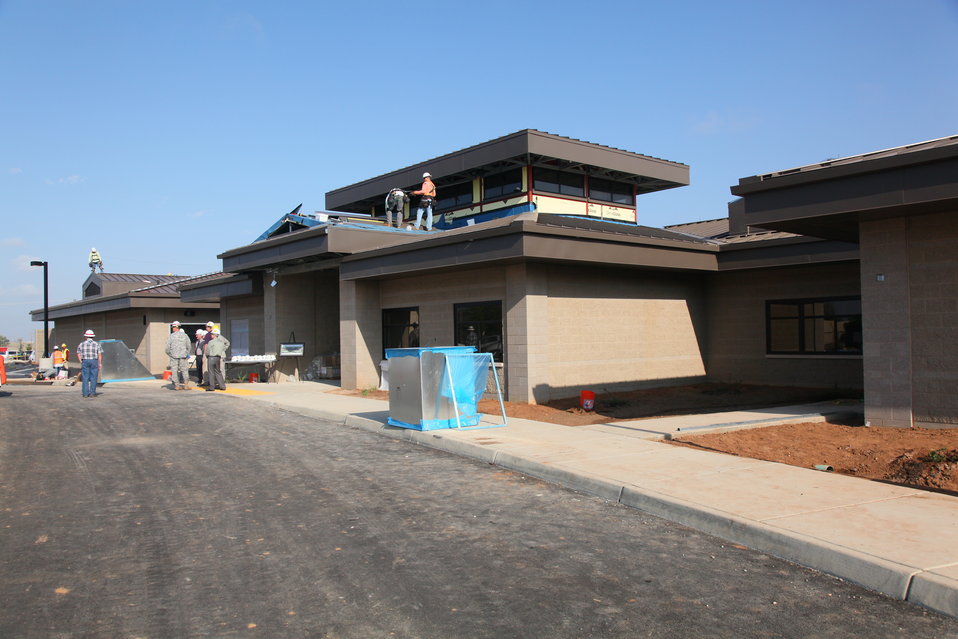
New Child Development Center nears completion at Beale

Workers put the finishing touches on the roof of the new $11.2 million Child Development Center at Beale Air Force Base outside of Marysville, Calif., Oct. 25, 2011. The U.S. Army Corps of Engineers Sacramento District is administrating construction of the 38,000 square-foot center, capable of accommodating 280 children from the ages of six weeks through five years old. Occupancy is scheduled to begin in December 2011 and a ribbon cutting ceremony is planned for the center in January 2012.